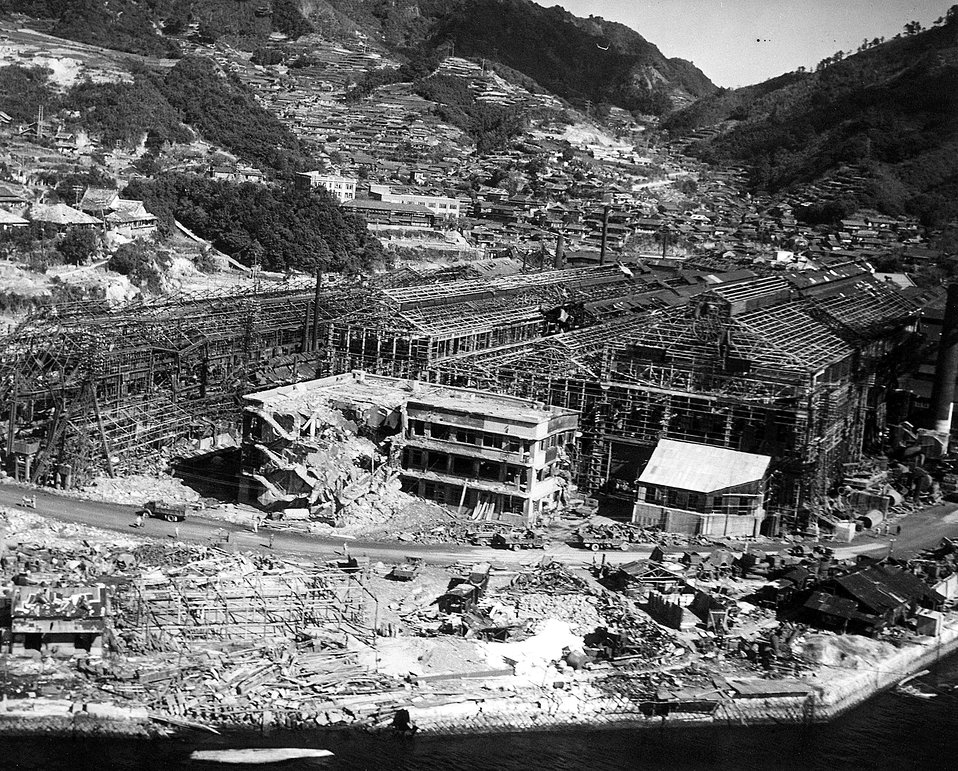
ATOMIC BOMBING OF JAPAN